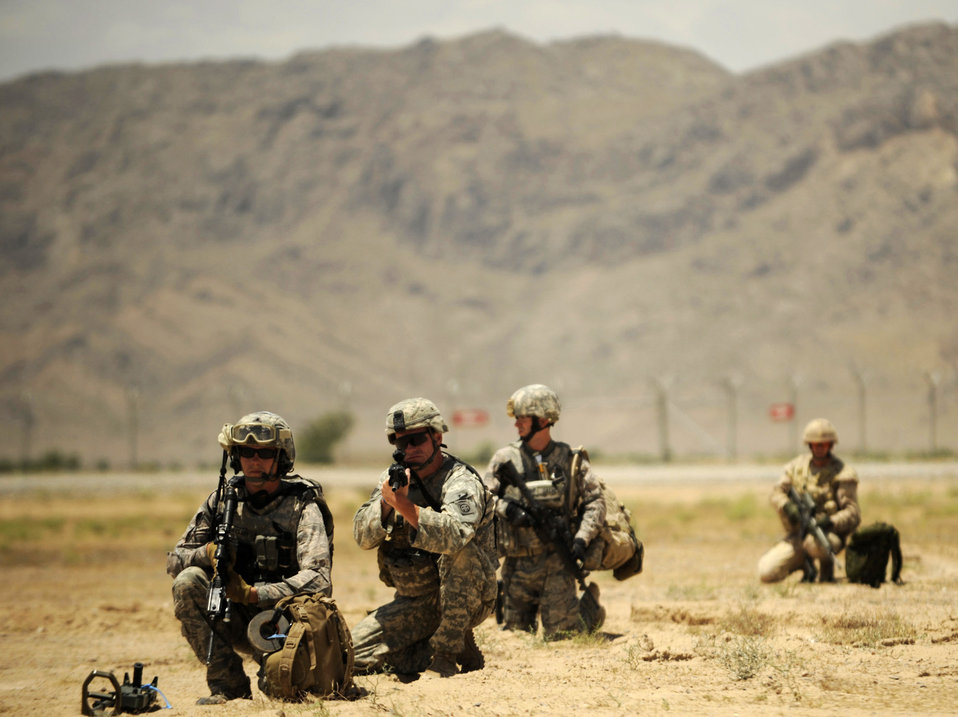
Kandahar Airmen protect servicemembers from IEDs

Airmen with the 755th Explosive Ordnance Disposal unit conduct explosive ordnance training with members of the 82nd Airborne May 5 at Kandahar Airfield, Afghanistan.